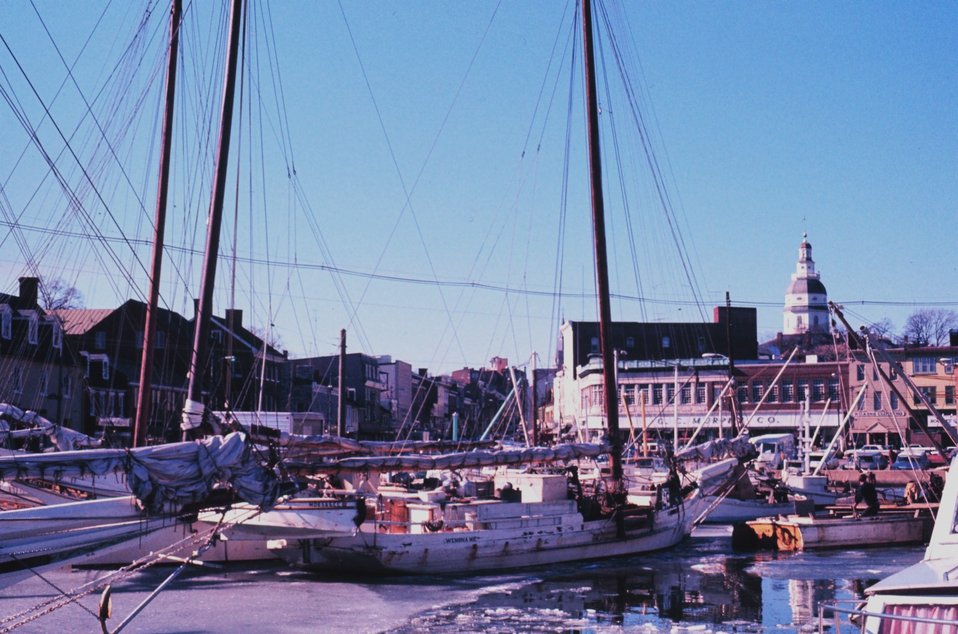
Sailing oyster dredger and statehouse on a cold morning in Annapolis.